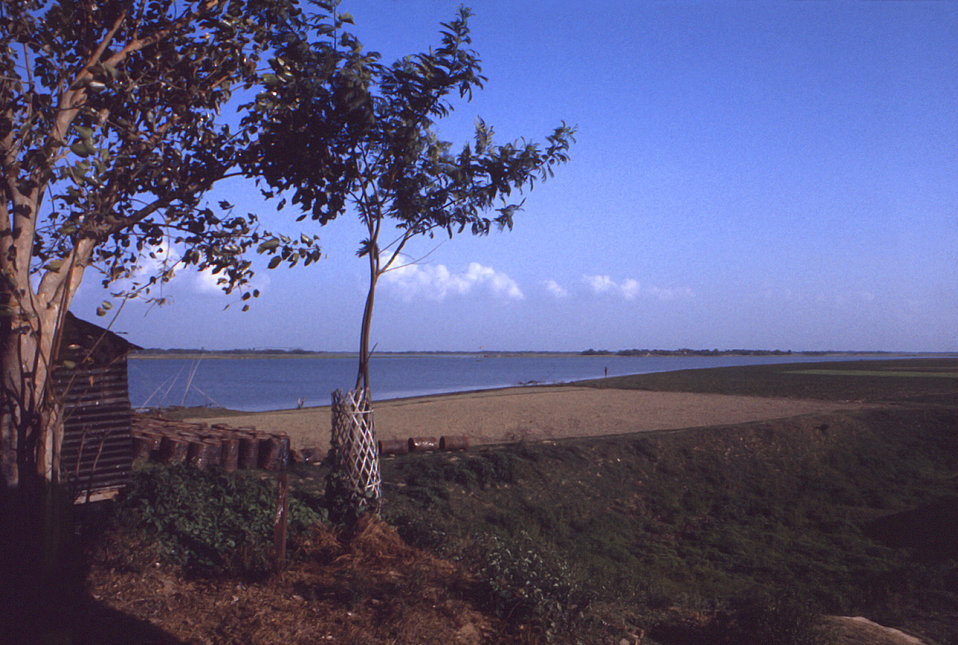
Photographed sometime in the early 1970s, during the worldwide smallpox eradication campaign, this image depicted a body of water somewhere in the country of Bangladesh.